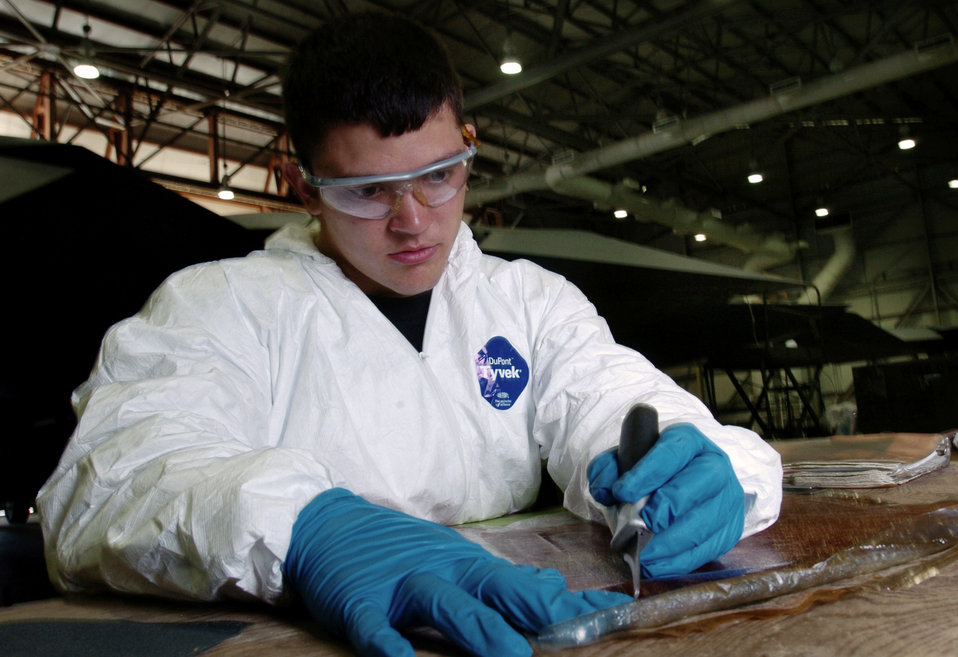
Missouri Airmen welcome challenge to keep B-2 safe

ANDERSEN AIR FORCE BASE, Guam -- Senior Airman Bruce Vaughn cuts material while repairing a B-2 Spirit bomber deployed here. The Spirit's skin has to be kept in pristine condition to help maintain its stealth qualities. Deployed B-2 bombers provide U.S. Pacific Command officials a continuous bomber presence in the Asia-Pacific region, enhancing regional security and the U.S. commitment to the Western Pacific. Sergeant Arbogast is a low observable technician from the 509th Maintenance Squadron at Whiteman Air Force Base, Mo.